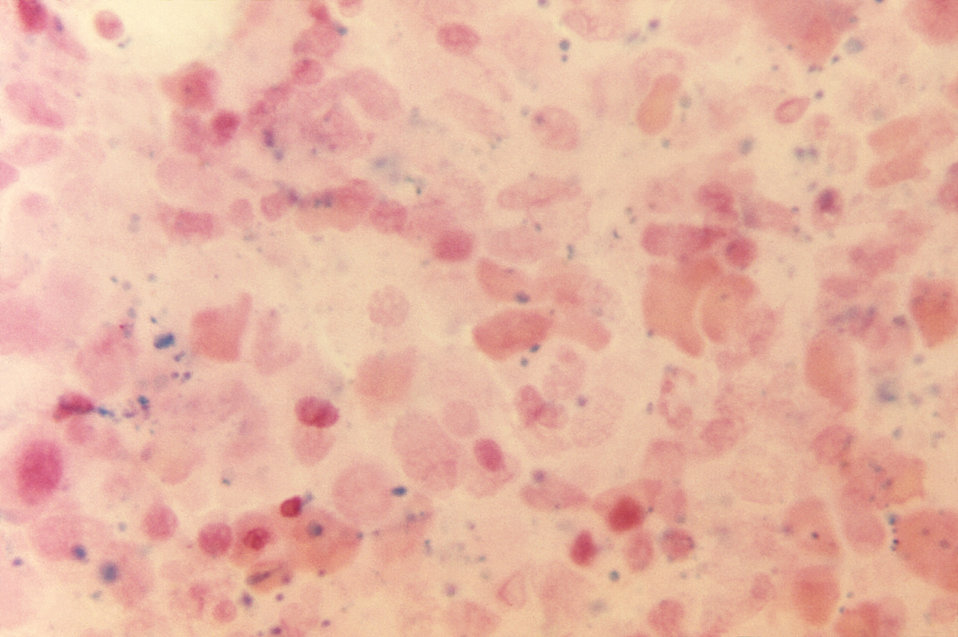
A photomicrograph detecting the presence of hemosiderin, stained blue, within diffuse bone marrow.